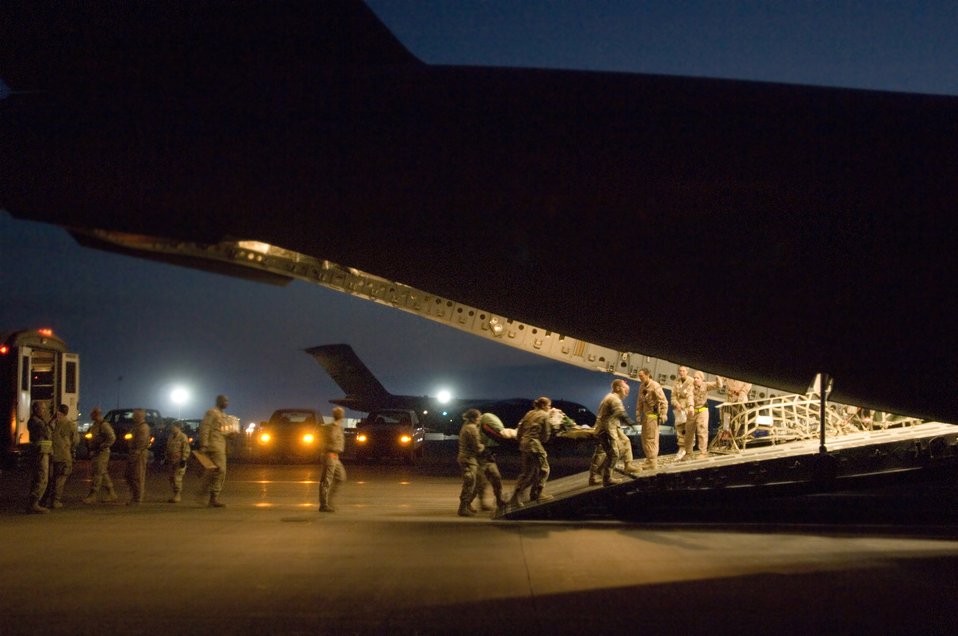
Airborne ambulance

Contingency aeromedical staging facility team members at Balad Air Base, Iraq prepare a critical-care patient Feb. 14 for transport on a C-17 Globemaster III to Landstuhl, Germany, where he will receive further care for his wounds.